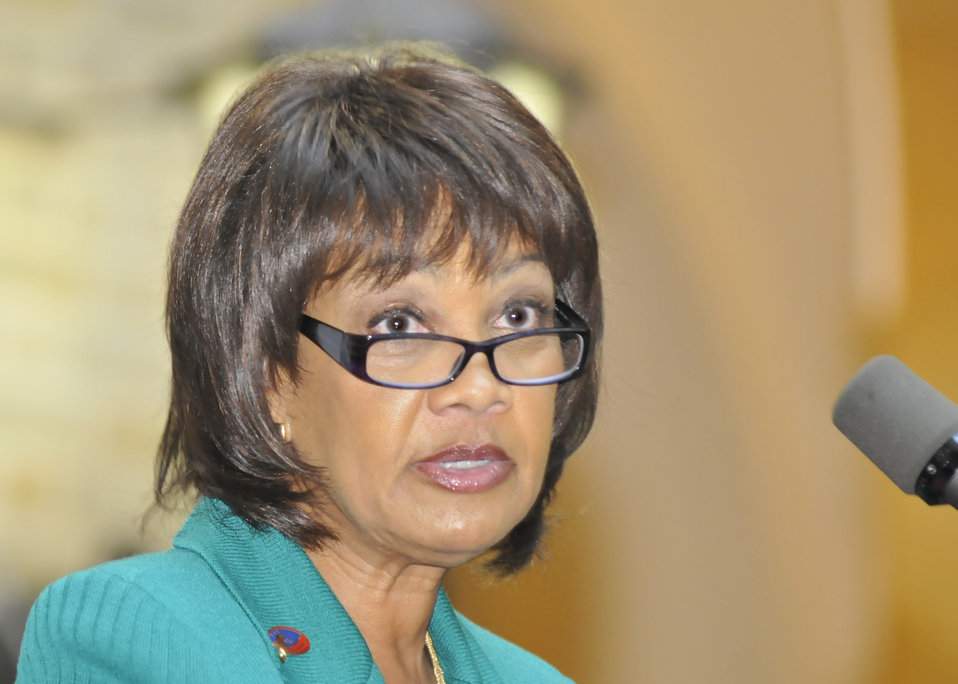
Linda Washington, Chair, Local Federal Coordinating Committee, CFCNCA makes remarks at the opening ceremonies for the 2010 Combined Federal Campaign held on the Patio of the U.S. Department of Agriculture in Washington, DC, on Tuesday, October 12, 2010. USDA Photo 10di1521-0031 by Bob Nichols.